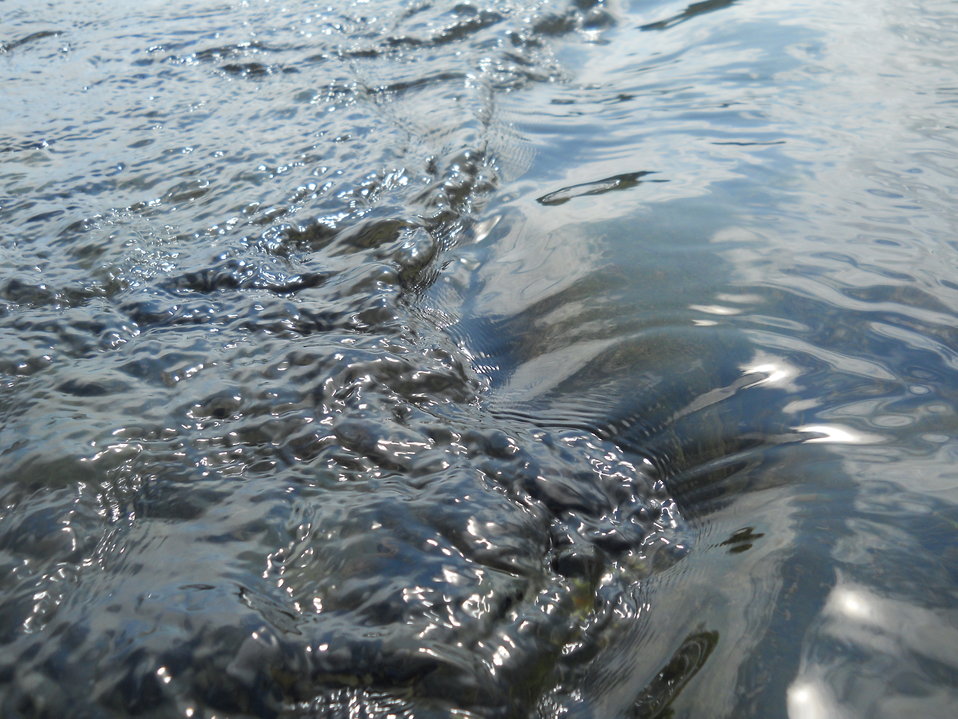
Flowing Beauty

Credit: USFWS
Photo taken by a Salmon Camp participant during a nature photography activity.

Source and Contact: Kodiak National Wildlife Refuge